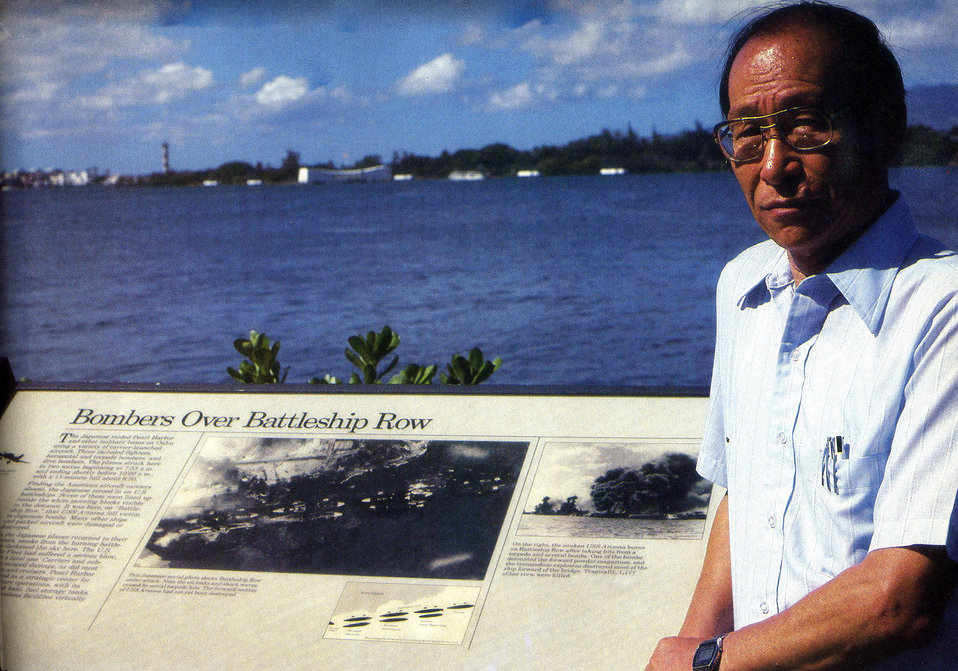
Superior Private, Joe Muratsuchi

Joe Muratsuchi, an American inducted into the Japanese army under duress during the war, stands by an Arizona War Memorial placard in 1987. Mr. Muratsuchi returned to the United States after working in occupied Japan as an interpreter.